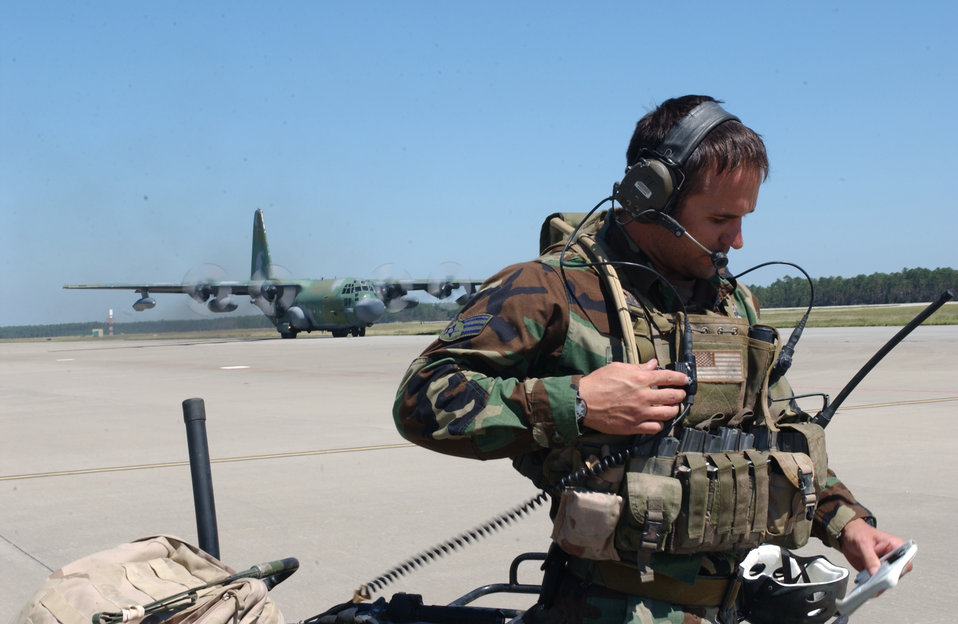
Controlling the airwave's

HURLBURT FIELD, Fla. -- Senior Airman Payne provides guidance for a MC-130H Combat Talon II as it prepares to land here Sept. 17. The base is recovering from Hurricane Ivan and has yet to return to normal operations. Airman Payne is an air traffic controller assigned to the 23rd Special Tactics Squadron.